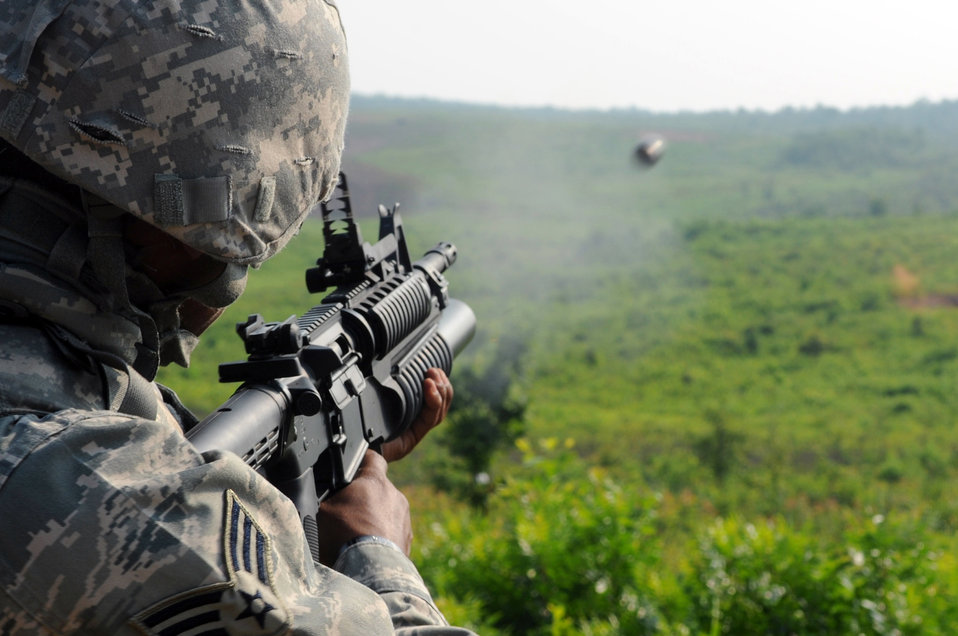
Fire away!

Senior Airman Patrick Garner, a patrolman with the 316th Security Forces Squadron, fires a practice round out of a grenade launcher at Marine Corps Base Quantico, Va., July 15, 2010.